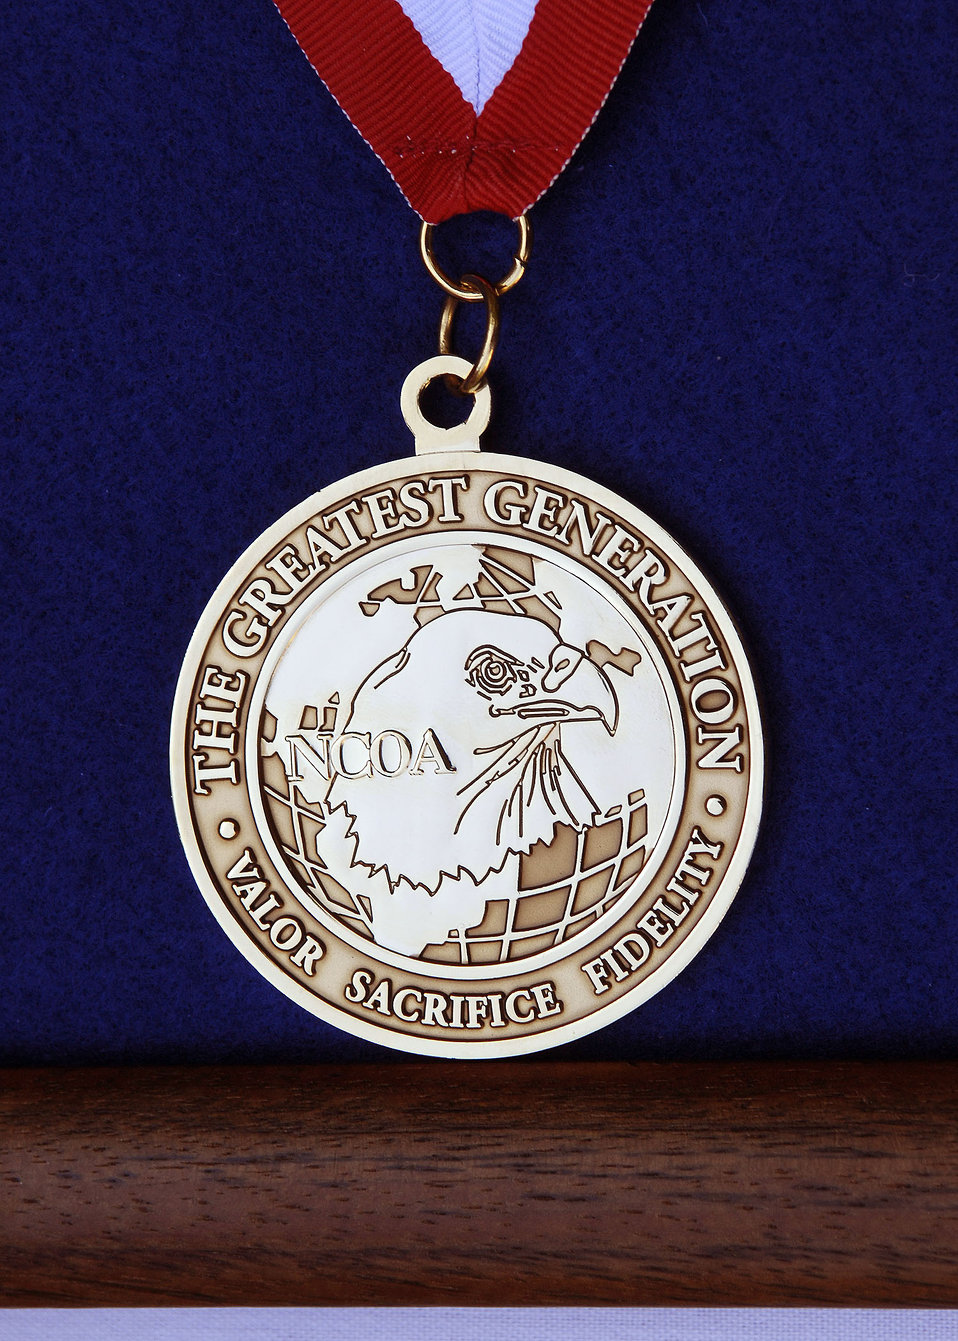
PACAF commander presents medallion to World War II nurse

This Noncommissioned Officers' Association World War II Veterans Medallion was presented to a member of the